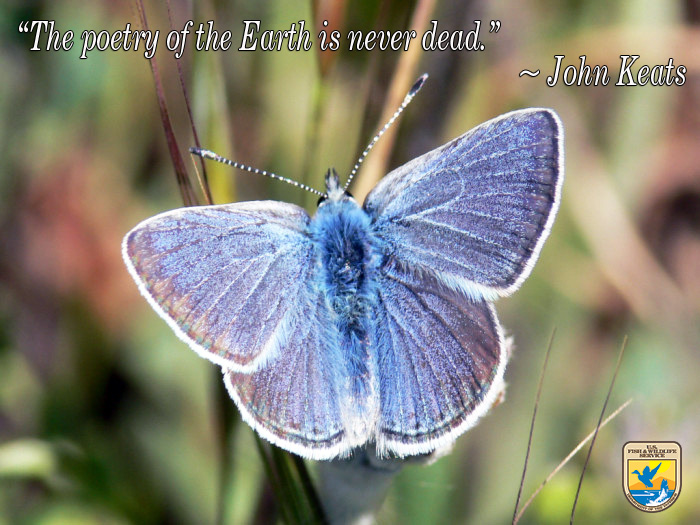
Get Inspired!

Download, share and enjoy! This quote comes from poet John Keats.